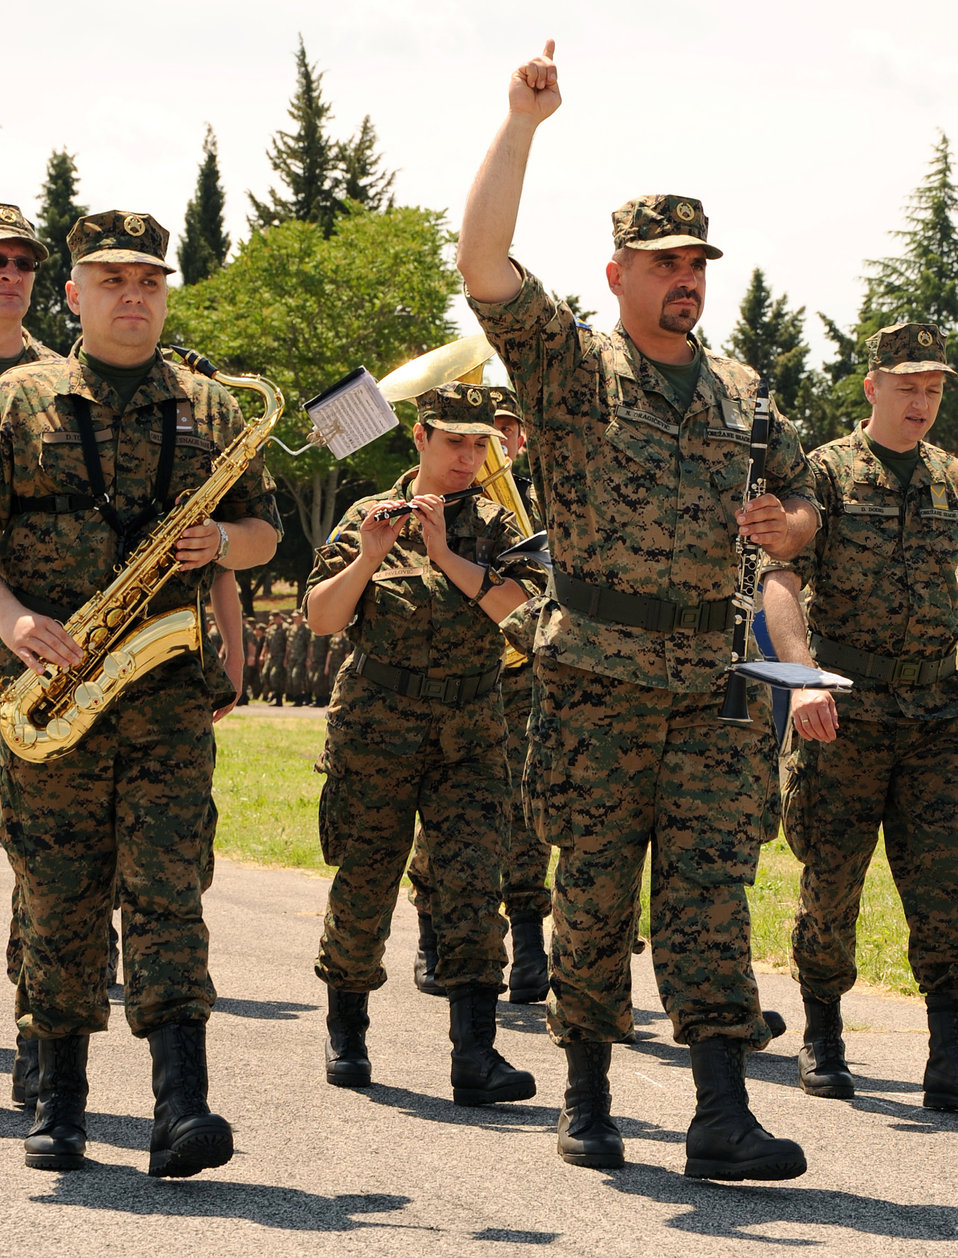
Multinational medical exercise readies forces

The Bosnian-Herzegovinian Military Orchestra plays music during the Shared Resilience 2012 opening ceremony at Capljina, Bosnia and Herzegovina, May 28, 2012. More than 500 military members from nine nations are participating in the annual U.S. Joint Chiefs of Staff-sponsored exercise May 28 to June 8.